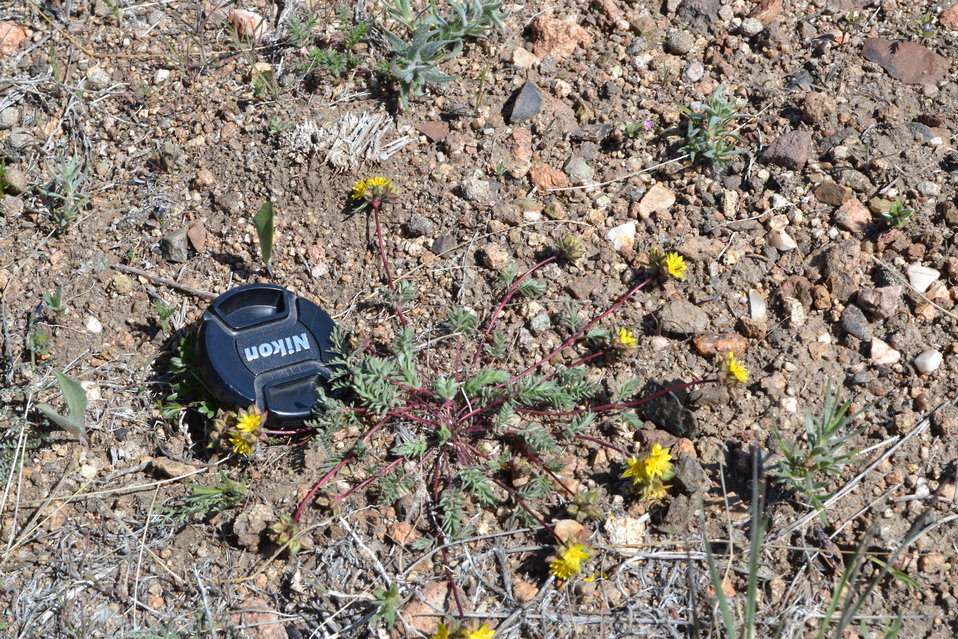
Webber Ivesia

Photo Credit: Sarah Kulpla/USFWS Webber ivesia (Ivesia webberi) is a member of the rose family. It is a low spreading, perennial forb approximately ten inches across with greenish-gray foliage and dark red, wiry stems. The leaves are mostly clustered around the base of the stems, with four to eight pairs of leaflets crowded at the tip, and generally covered with long, silky grayish hairs. Flowering typically begins in May and extends through June. The small bright yellow flowers occur in groups. The whole plant becomes reddish-tinged late in the season. This plant occurs in Washoe and Douglas Counties in Nevada and in Lassen, Plumas, and Sierra Counties in California.